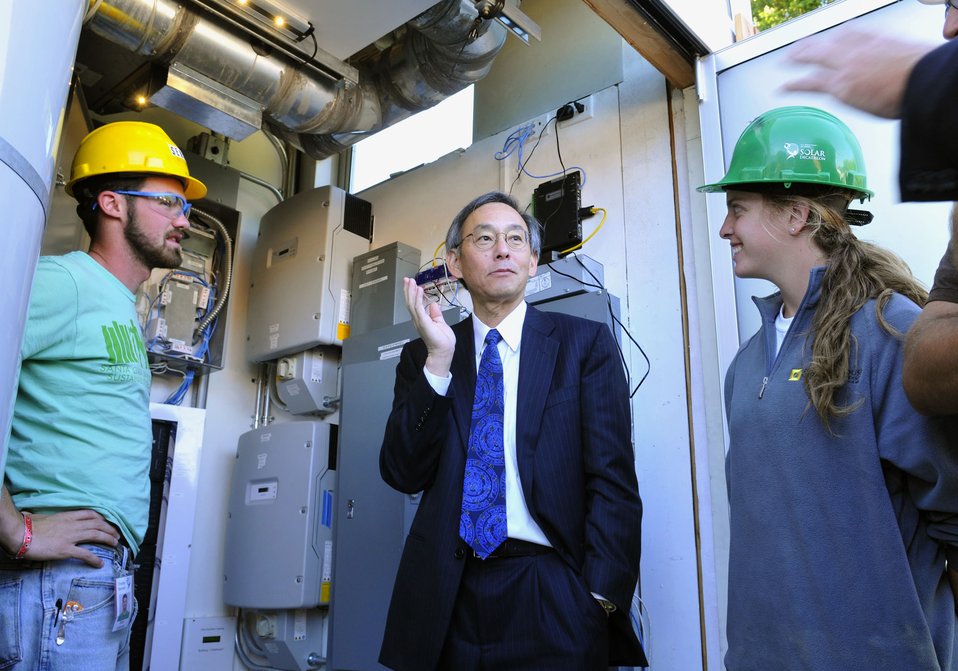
Solar Decathlon 2009 on the National Mall, with Sec. Chu

Solar Decathlon 09